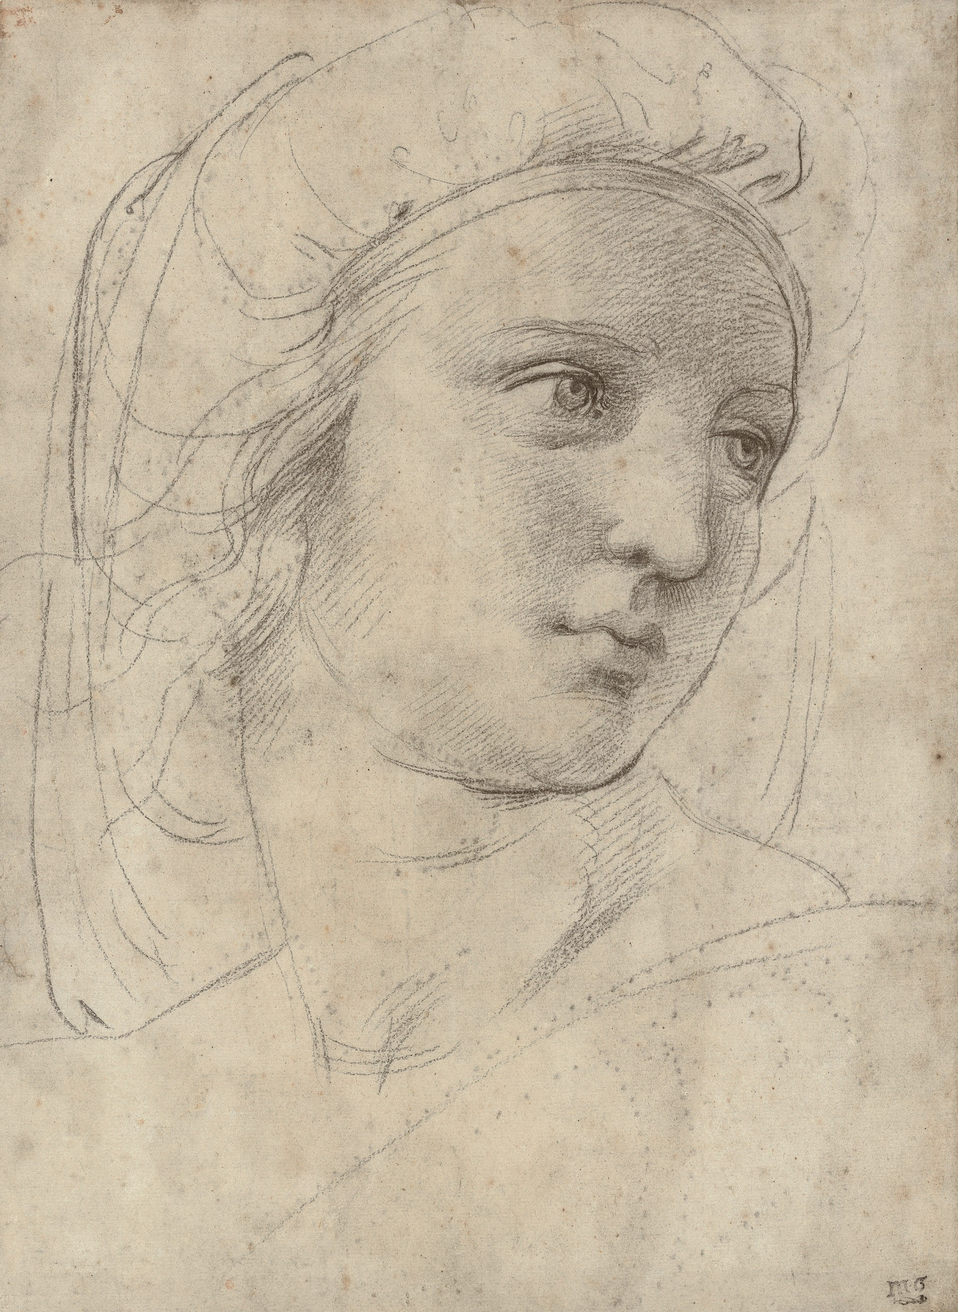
'Head of a muse' by Raffaello Sanzio